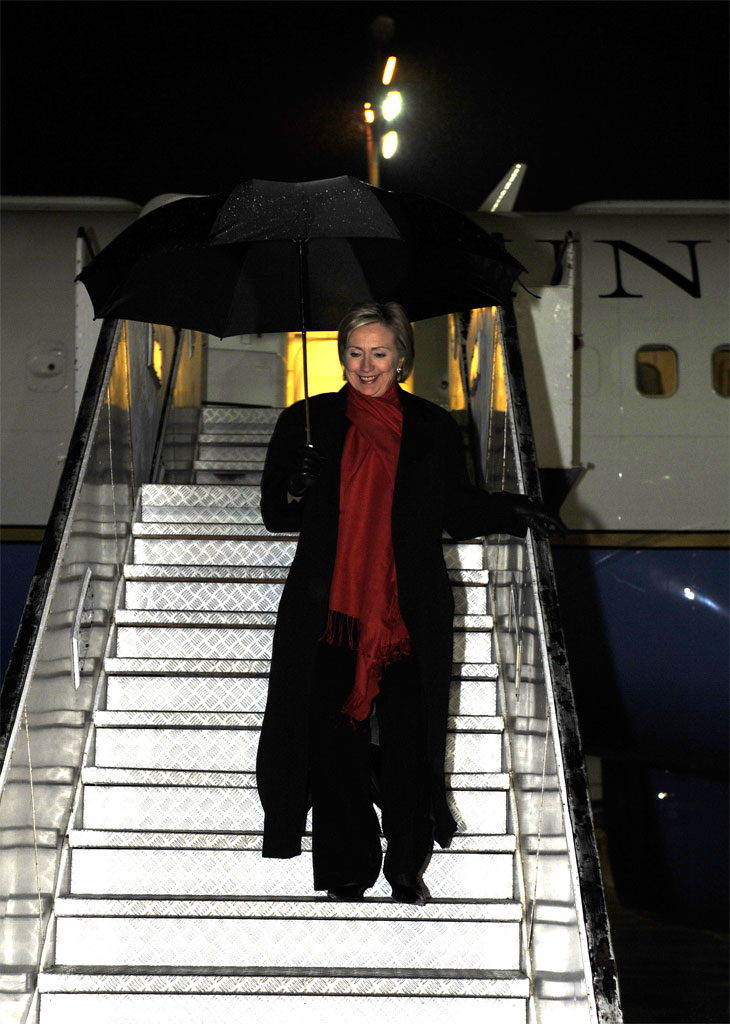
Secretary Clinton Arrives in Jerusalem

U.S. Secretary of State Hillary Rodham Clinton stepping down from the airplane holding an umbrella against the rain at Ben Gurion Airport, Israel March 2, 2009.